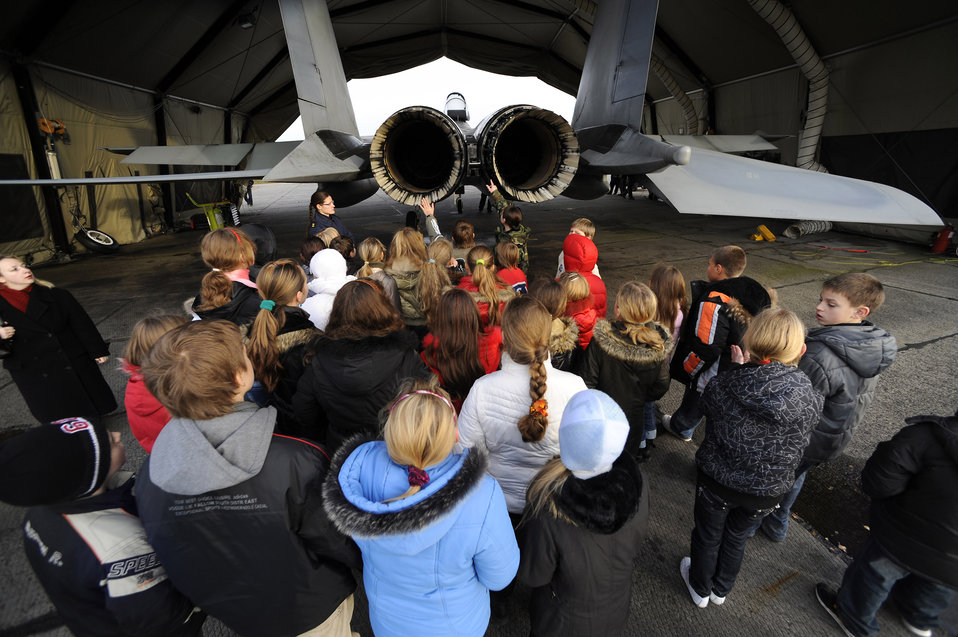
What does that do?

Lithuanian school children learn about the capabilities of the F-15 Eagle from American military members at an air base in Siauliai, Lithuania. The 493rd Expeditionary Fighter Squadron is there to support the NATO Baltic air policing mission through the New Year.